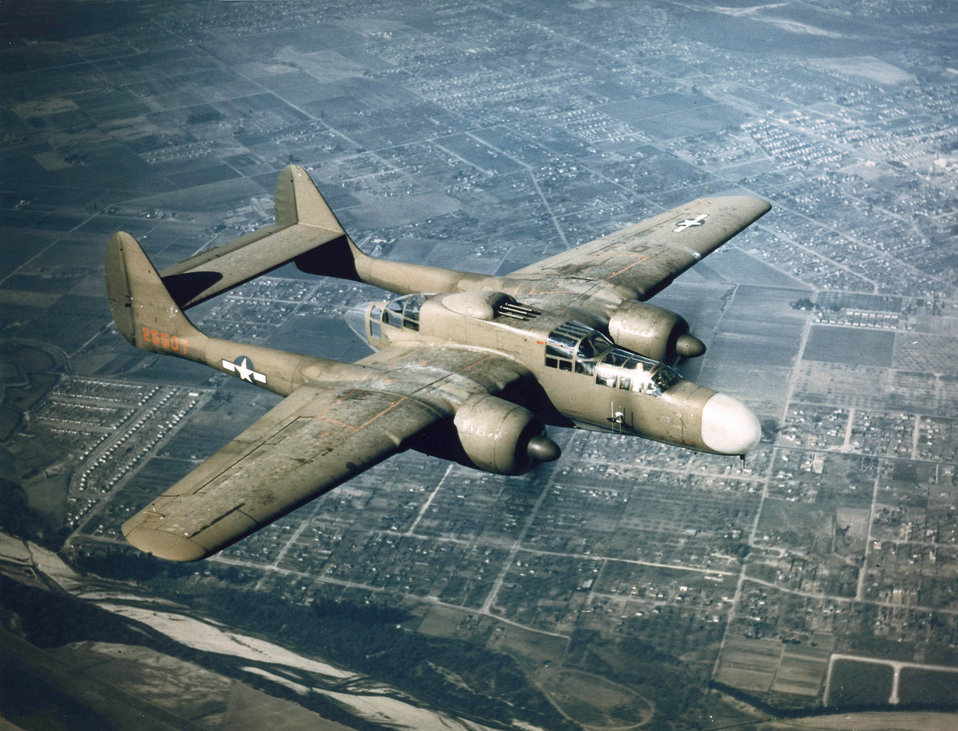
P-61

1940's -- NORTHROP P-61